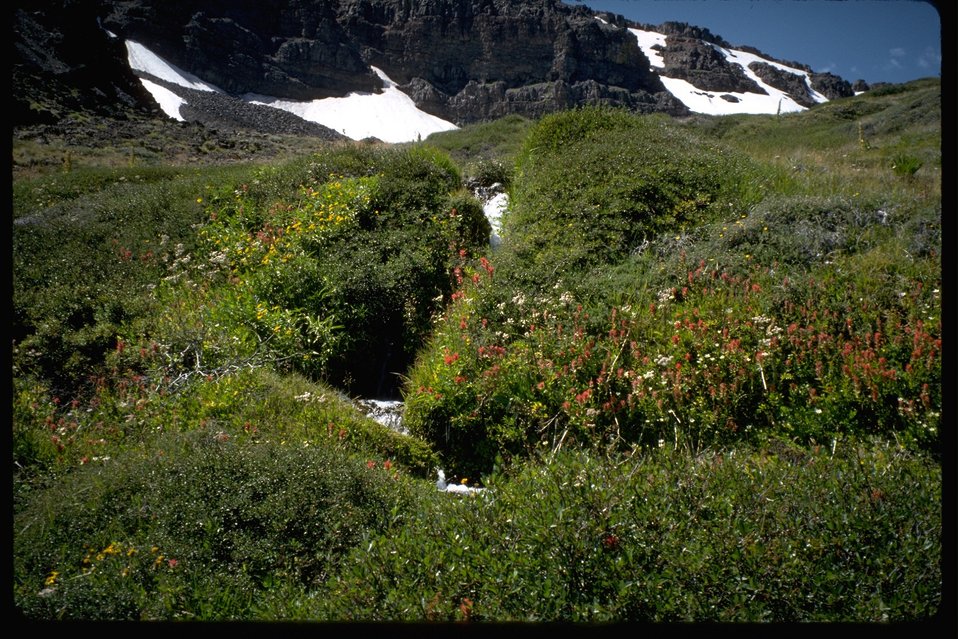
Lush Meadow and hanging garden along Willow Creek (Botanical ACEC) in the High Steens.